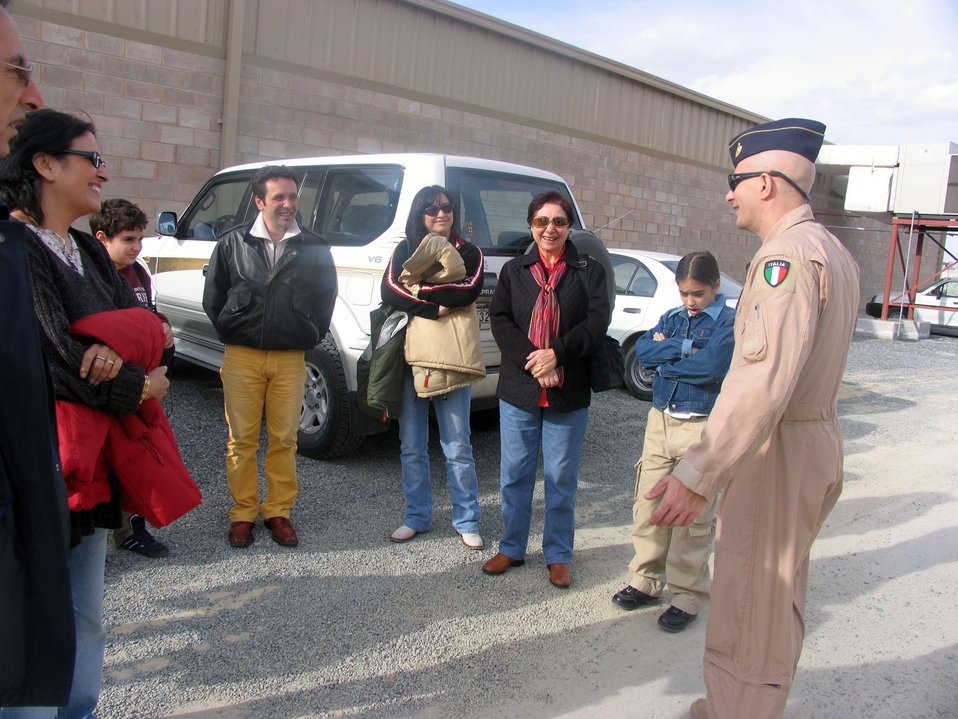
Exchange pilot

SOUTHWEST ASIA (AFPN) -- Capt. Daniele Poli gives a base tour to Italian military attaches and their families from the Italian Embassy in Kuwait City. Captain Poli is a member of the Air Force as part of an exchange program between Italy and the U.S. He is a C-130 Hercules pilot with the 738th Expeditionary Airlift Squadron deployed from Little Rock AFB, Ark., supporting Operations Iraqi and Enduring Freedom as well as operations in the Horn of Africa.